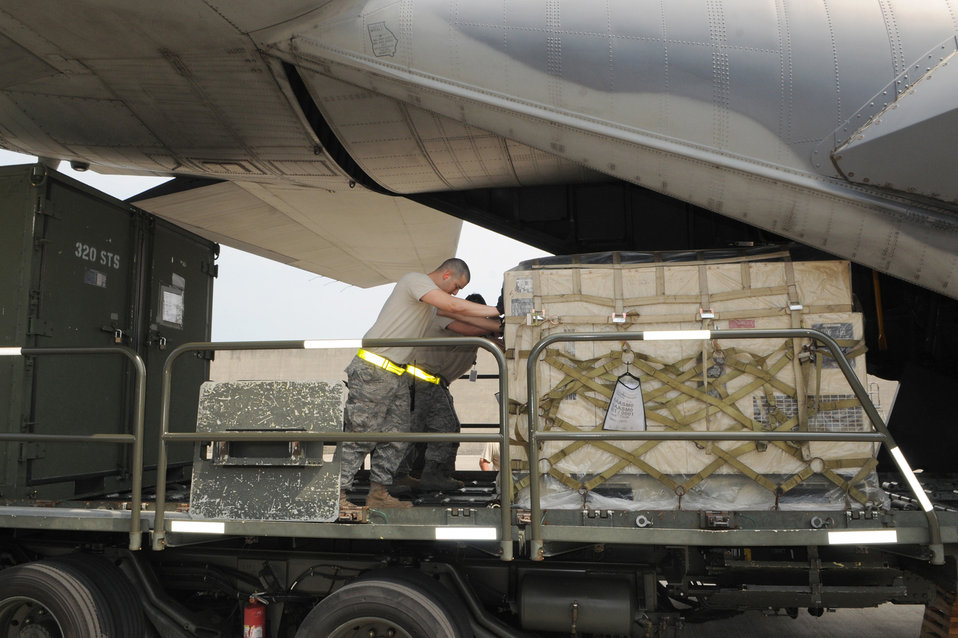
Special ops Airmen deploy additional humanitarian support

Airmen from the 1st Special Operations Squadron and 733rd Air Mobility Squadron push a pallet into a MC-130H Combat Talon II March 14, 2011, at Kadena Air Base, Japan. The aircraft is delivering additional equipment and support forces for the 353rd Special Operations Group forces deployed supporting humanitarian relief efforts at Yokota Air Base, Japan.